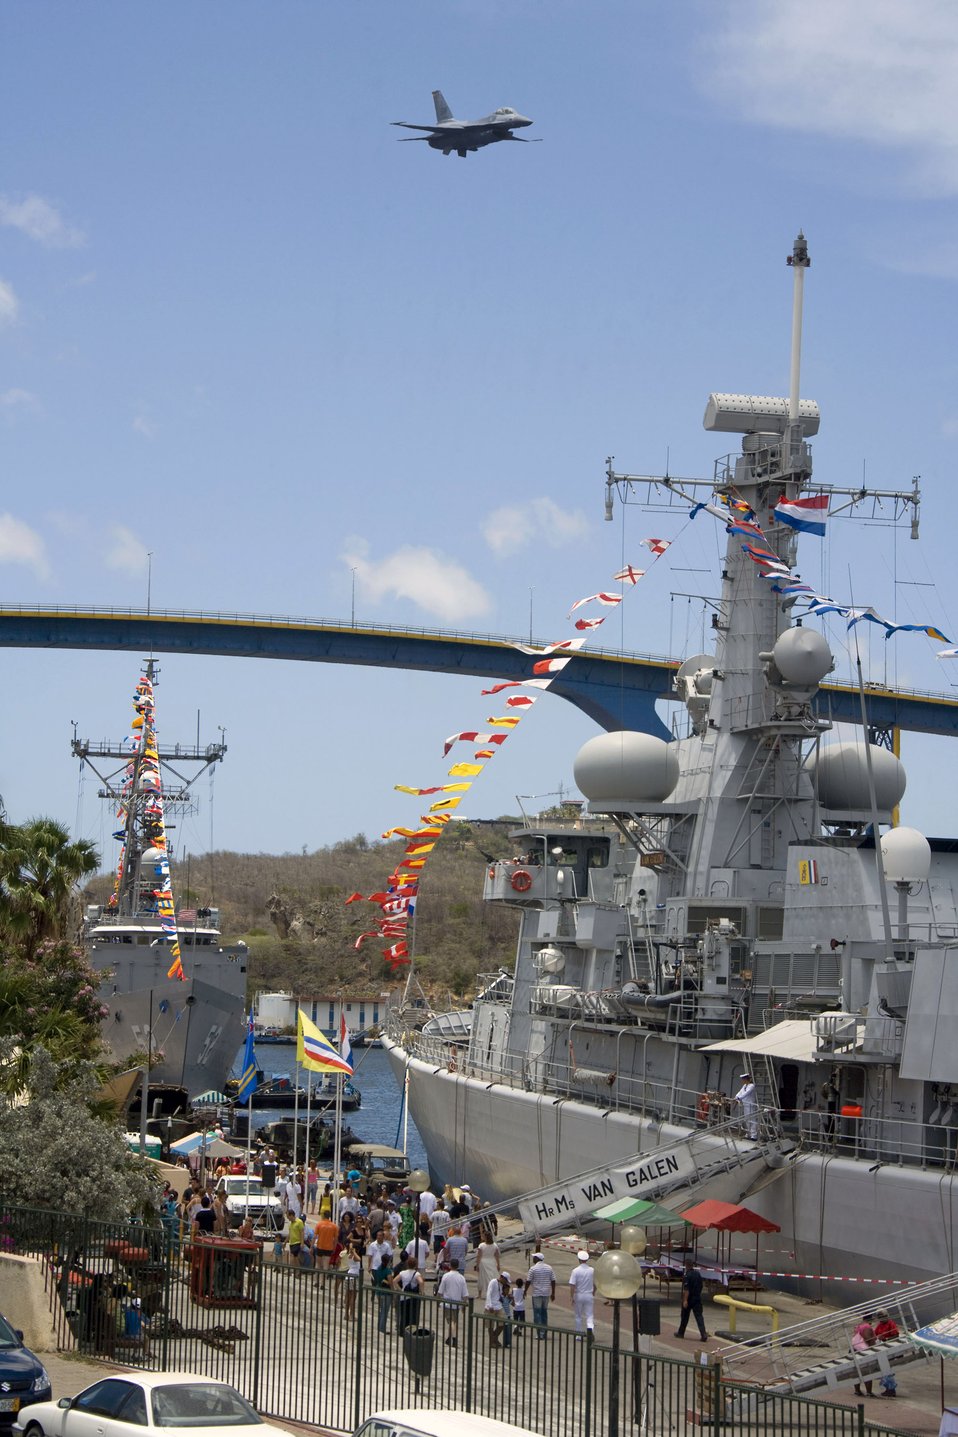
Dutch Navy Days

An F-16 Fighting Falcon, flown by Capt. George Clifford of the Viper East F-16 demonstration team, rockets over the USS Carr and a Dutch navy ship in Curacao, Netherlands Antilles. The Viper East team, from Shaw Air Force Base, S.C., joined officials from Air Forces Southern headquarters at Davis-Monthan AFB, Ariz., to augment